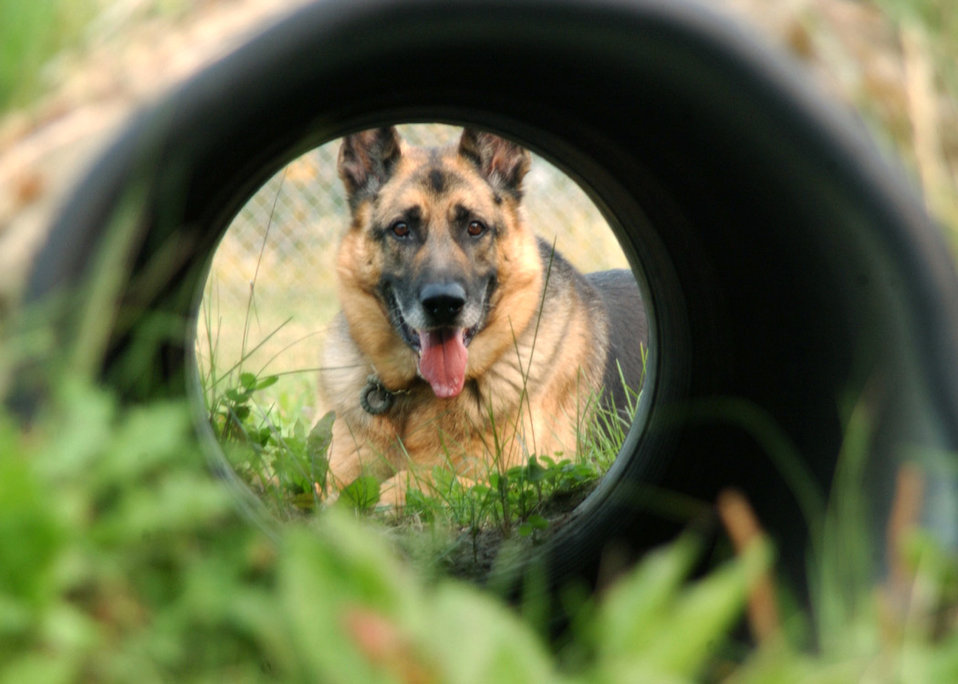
Dog patrol

EIELSON AIR FORCE BASE, Alaska -- Rin Tin, a military working dog, waits for the command to enter a tube during training Aug. 18. Military working dogs here provide anti-terrorism and security to the base as well as to deployed locations worldwide. Rin Tin's day usually begins at 4 a.m. with feeding and a seven-point checkup by his handler. Then comes grooming, a rub down, obedience training and a run through the confidence course before beginning the day on patrol. Rin Tin is a 7-year-old 98-pound German shepherd assigned to the 354th Security Forces Squadron.